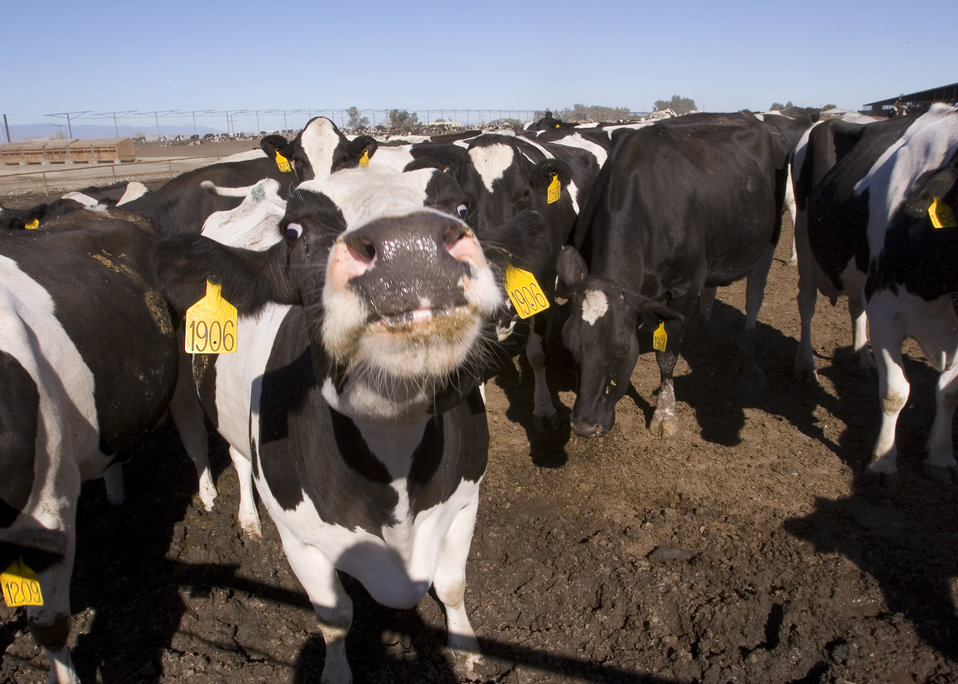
Diary cows in Sacramento Valley, California.